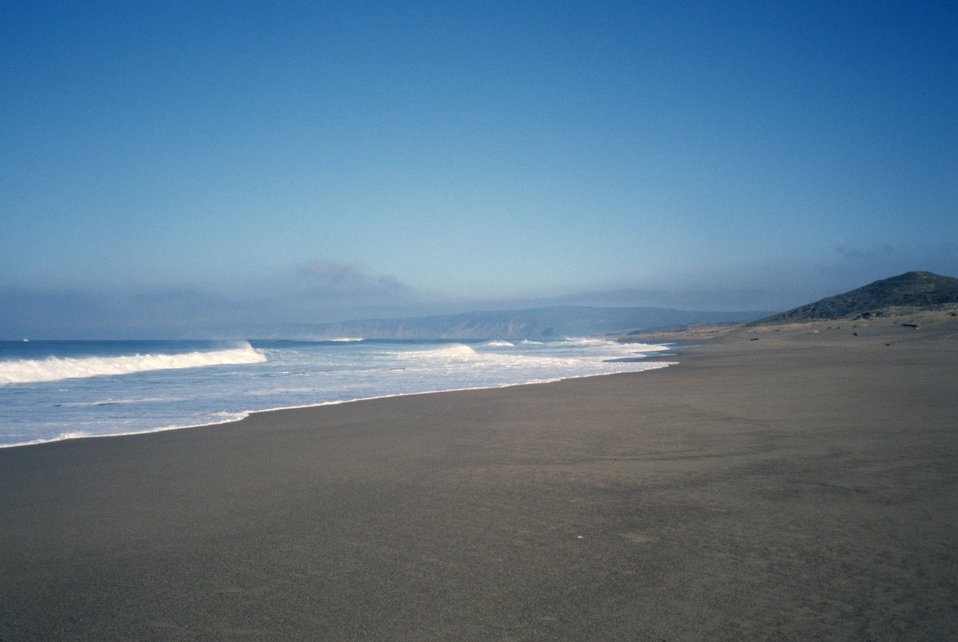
Point Reyes Great Beach